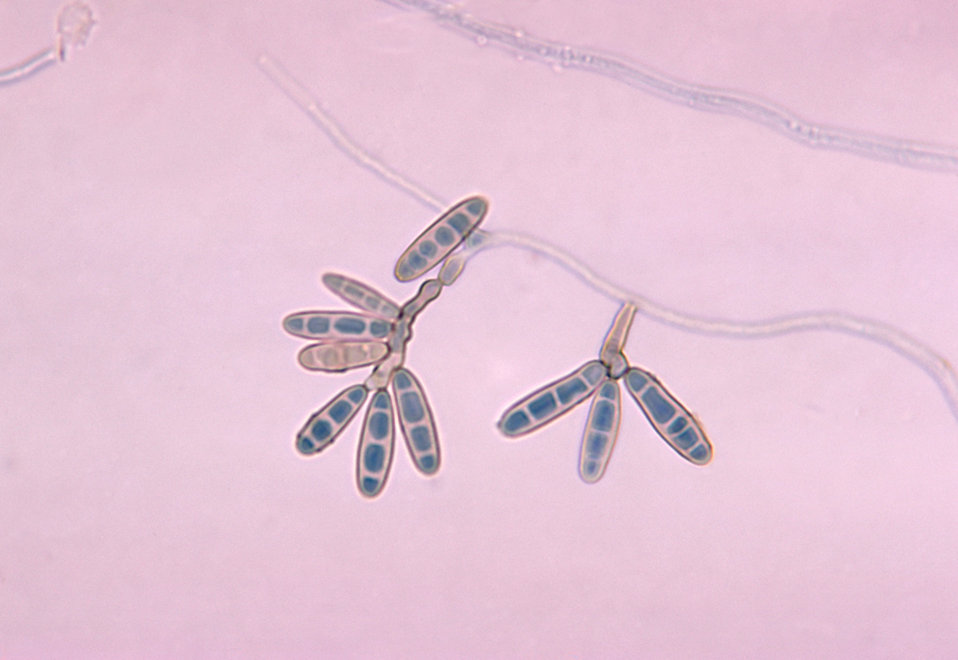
This photomicrograph shows conidia and conidiophores of a Helminthosporium sp. fungus.